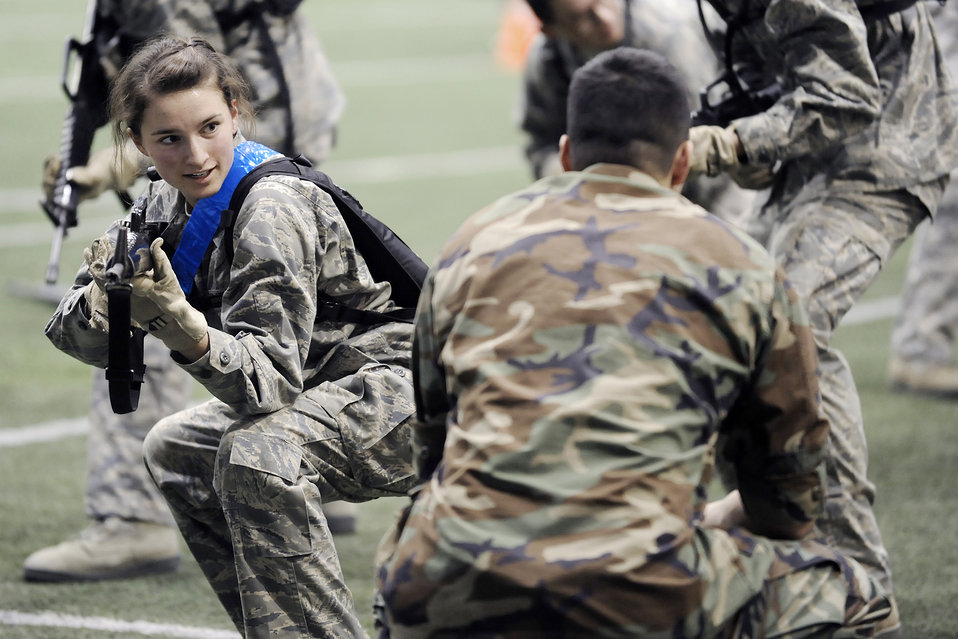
Academy freshmen attain status

Freshman Carly Serratore receives encouragement during recognition events at the U.S. Air Force Academy, Colo., March 12, 2010. Recognition consists of several days of mentally and physically demanding activities, and culminates with the ascension of the freshmen into the ranks of upper class cadets.